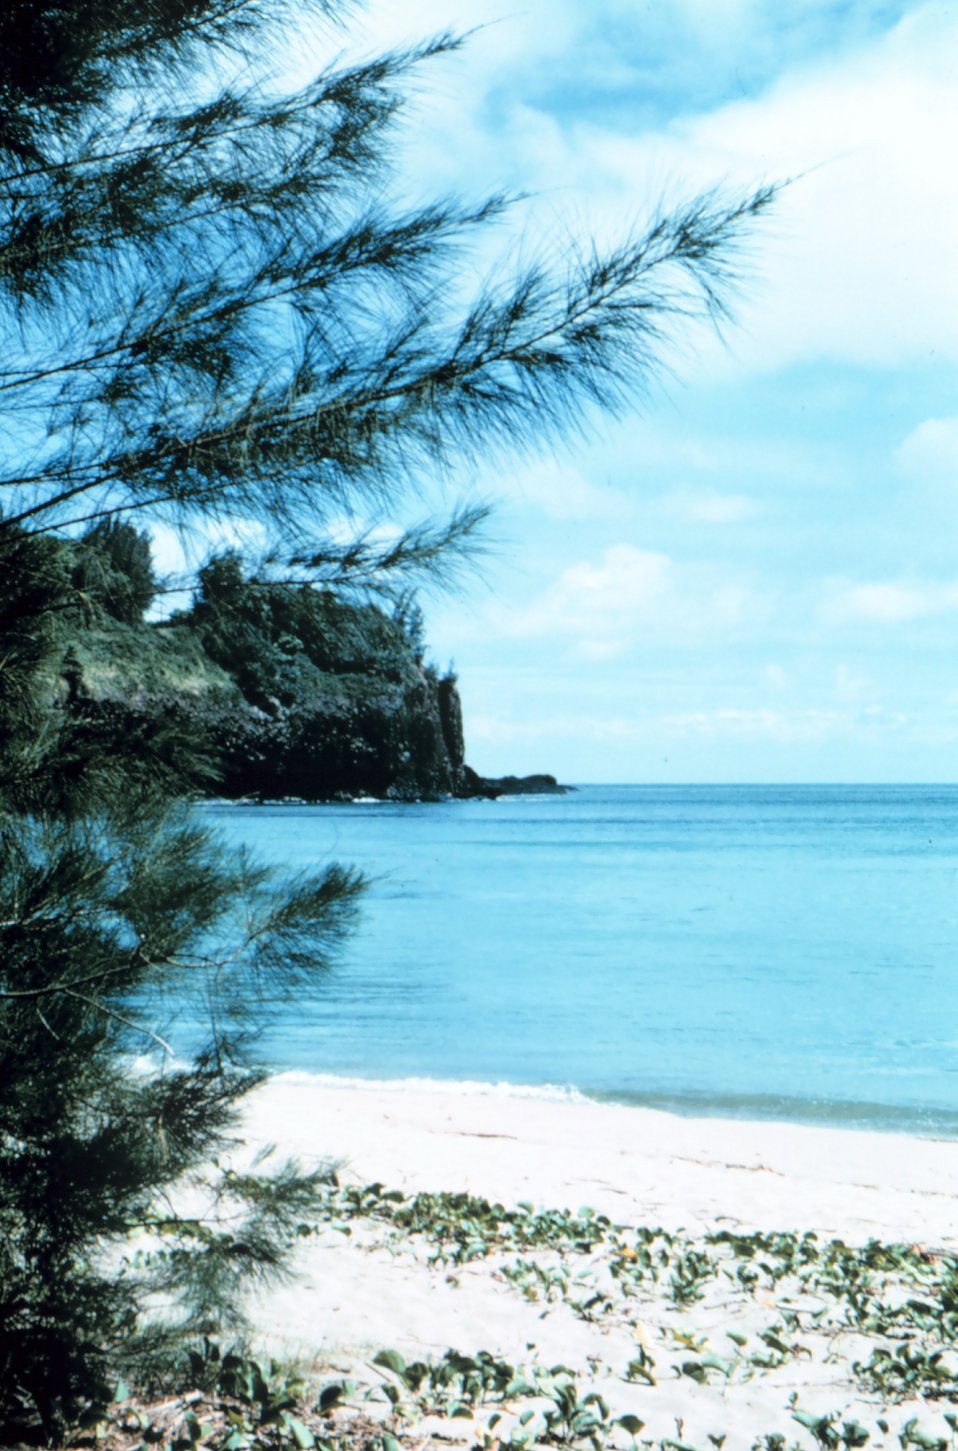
Kalihiwai Bay